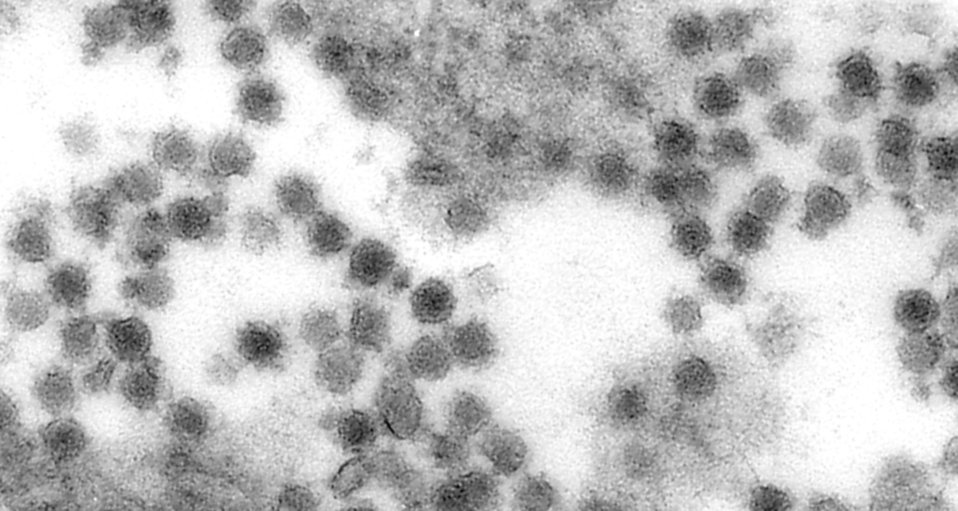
An electron micrograph of the West Nile virus.